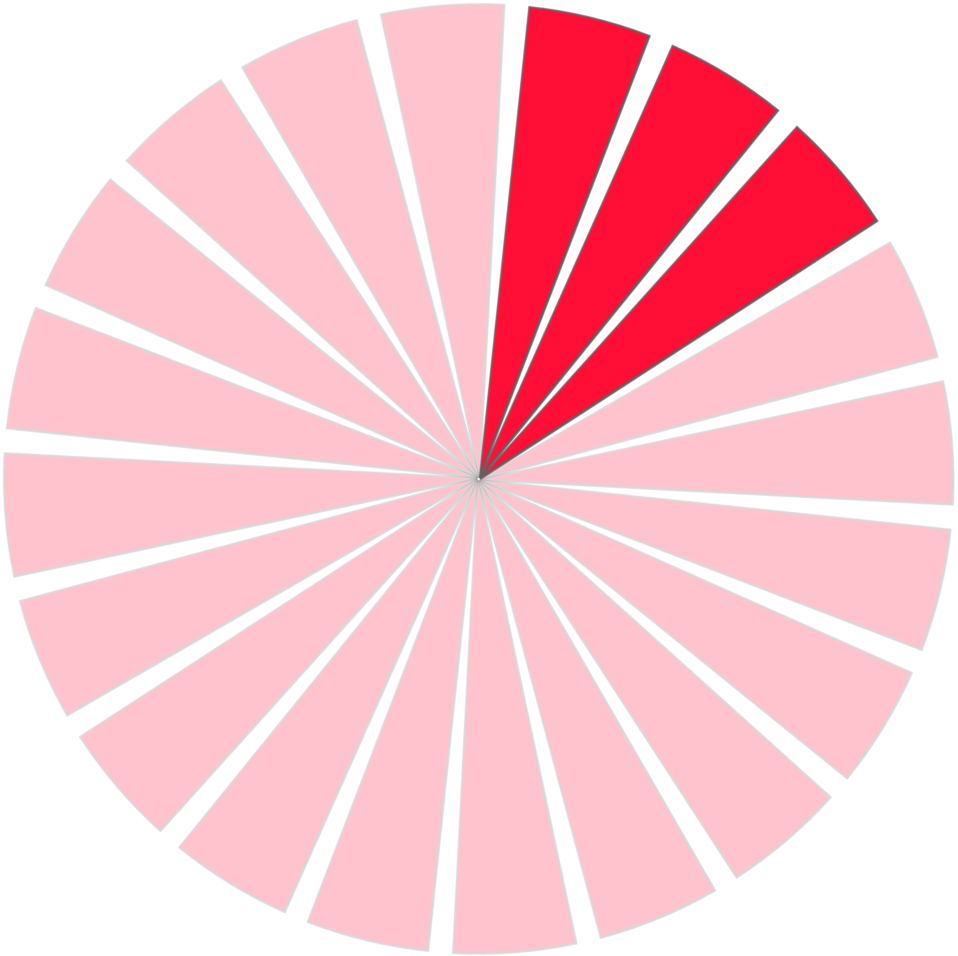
15proc